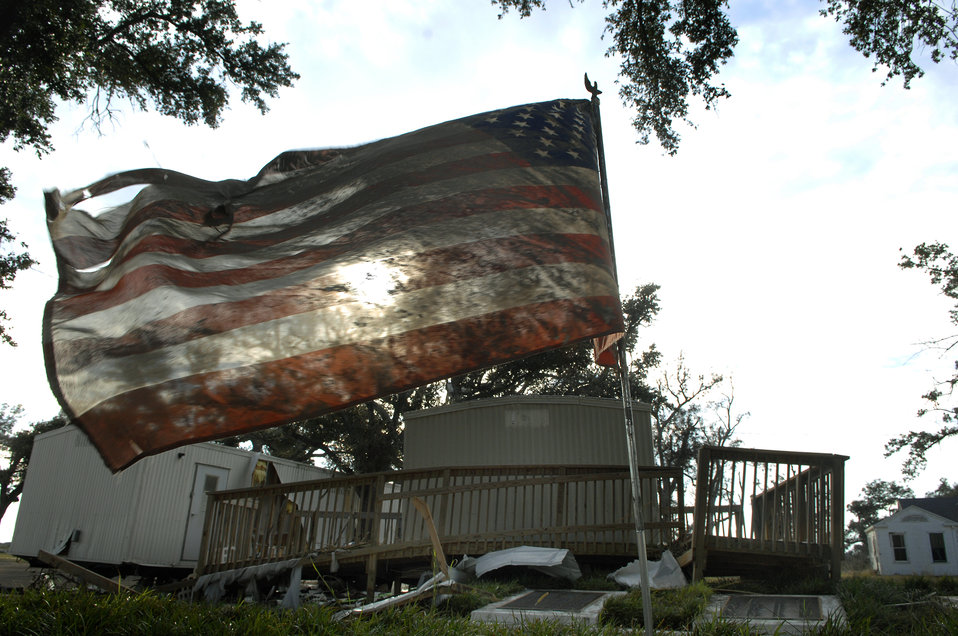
Louisiana Guard clears devastation from Cameron Parish

A U.S. flag flies, covered in mud and debris, in front of the Cameron, La., court house Sept. 15. The flag was rescued by members of the Louisiana Army National Guard's 528th Engineer Battalion who were performing cleanup operations in the city.